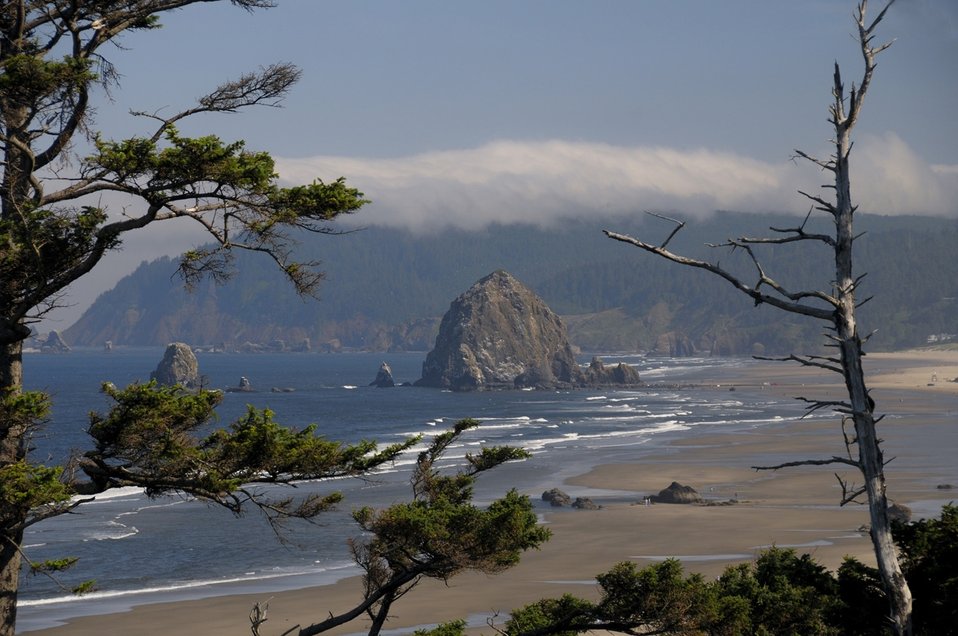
Oregon Islands NWR

Haystack Rock, part of Oregon Islands National Wildlife Refuge, at Cannon Beach, as viewed from U.S. Highway 101.